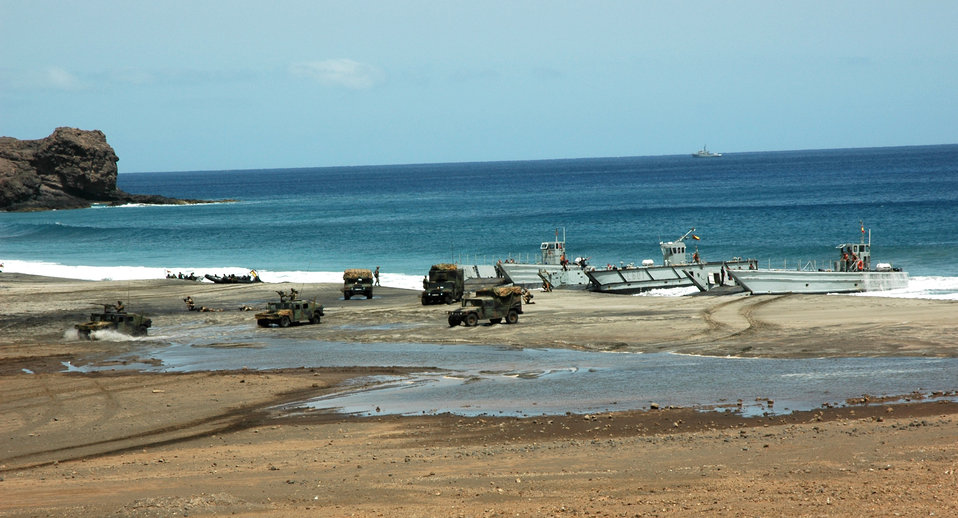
NATO troops exercise at Steadfast Jaguar

A simulated amphibious and land assault is conducted in Sao Vicente, Cape Verde, on Friday, June 23, to demonstrate NATO's show of force during Exercise Steadfast Jaguar. More than 7,000 NATO servicemembers from land, maritime and air components are participating in the exercise, which ends today.